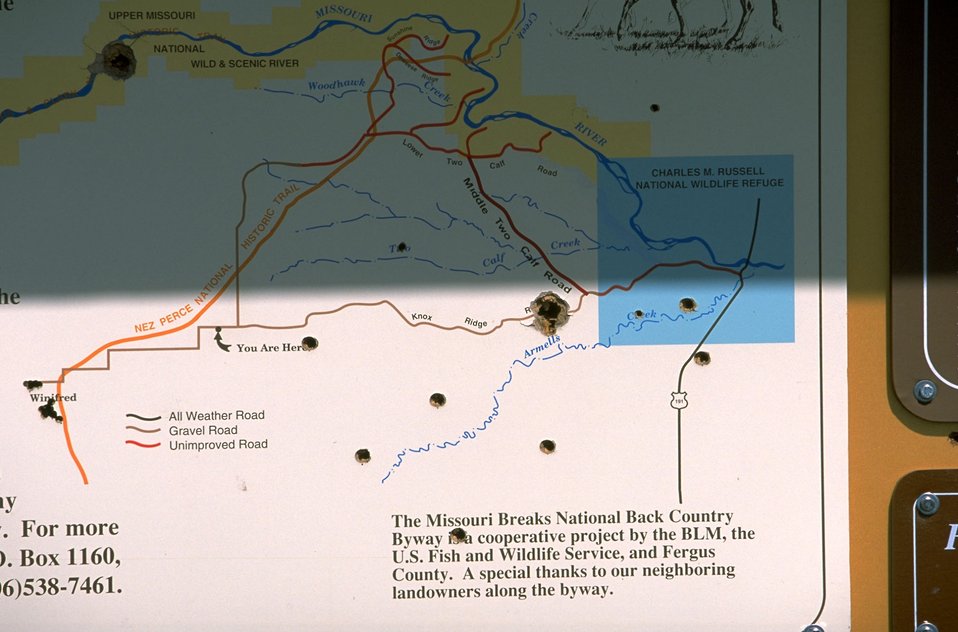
Bullet holes in Kiosk on Knox Ridge Road